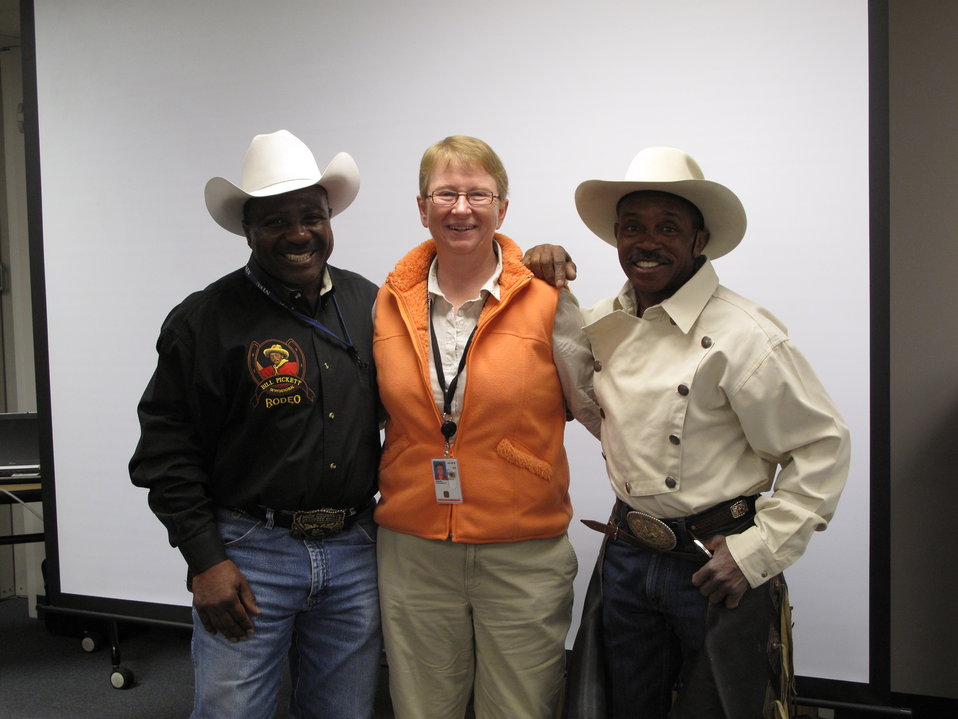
Maurice Wade, Kathy Dennis and Charles Sampson

The two cowboys pose with Kathy Dennis at the end of their talk.